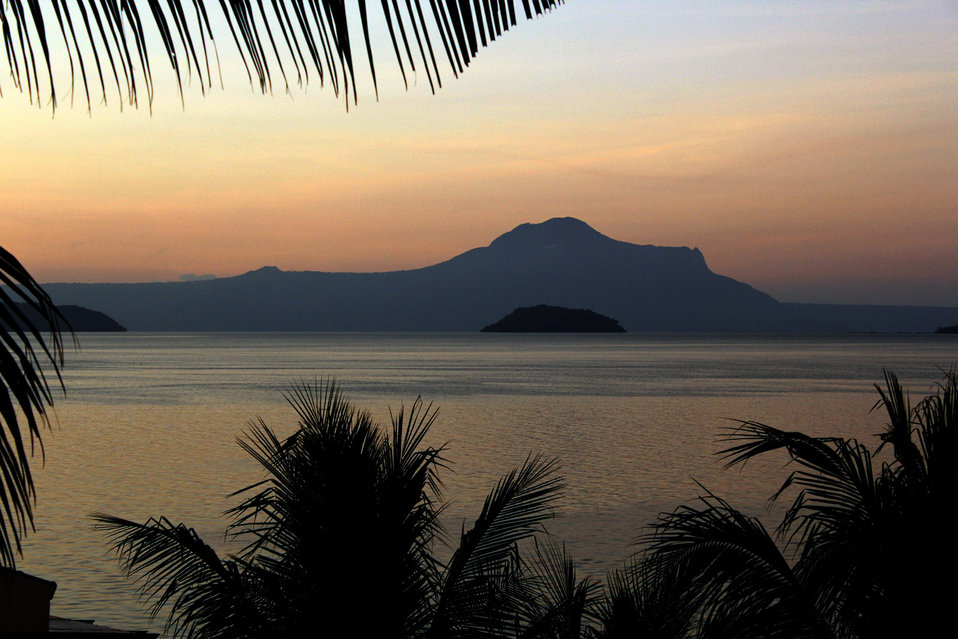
Morning mist background 5

Morning sunrise.